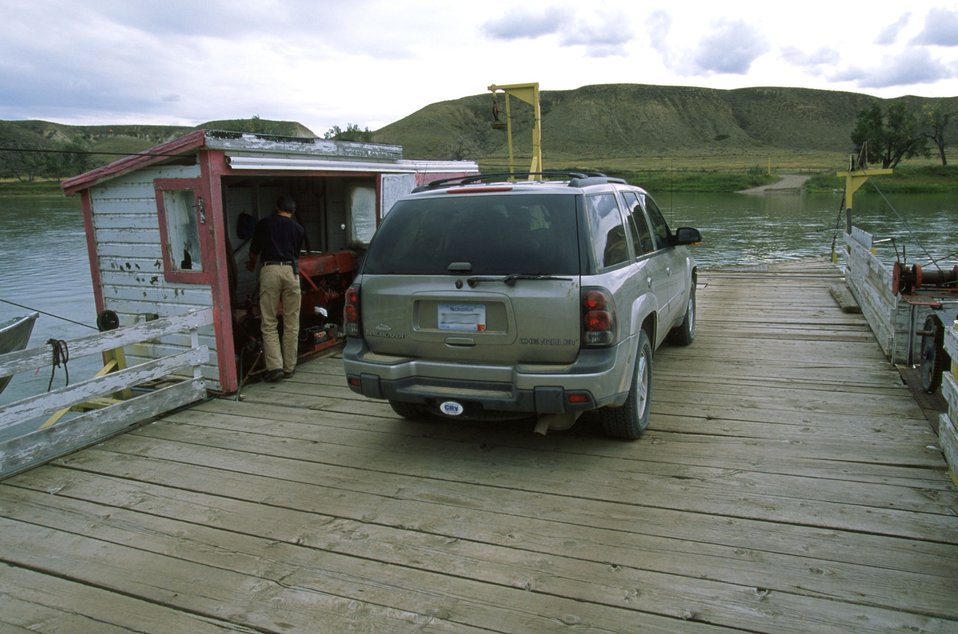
Stafford Ferry across the Upper Missouri River